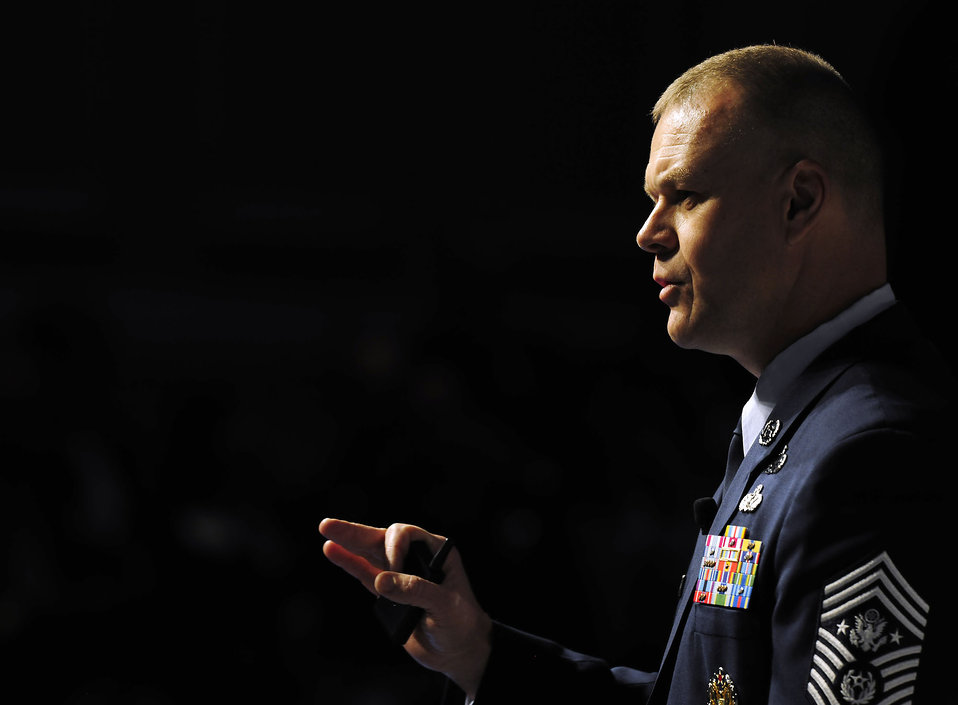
Chief Roy at the AFA convention

Chief Master Sgt. of the Air Force James Roy addresses attendees of the Air Force Association Air and Space Conference and Technology Exposition, Sept. 15, 2010, at National Harbor in Oxon Hill, Md. He mentioned the deliberate development of Airmen.